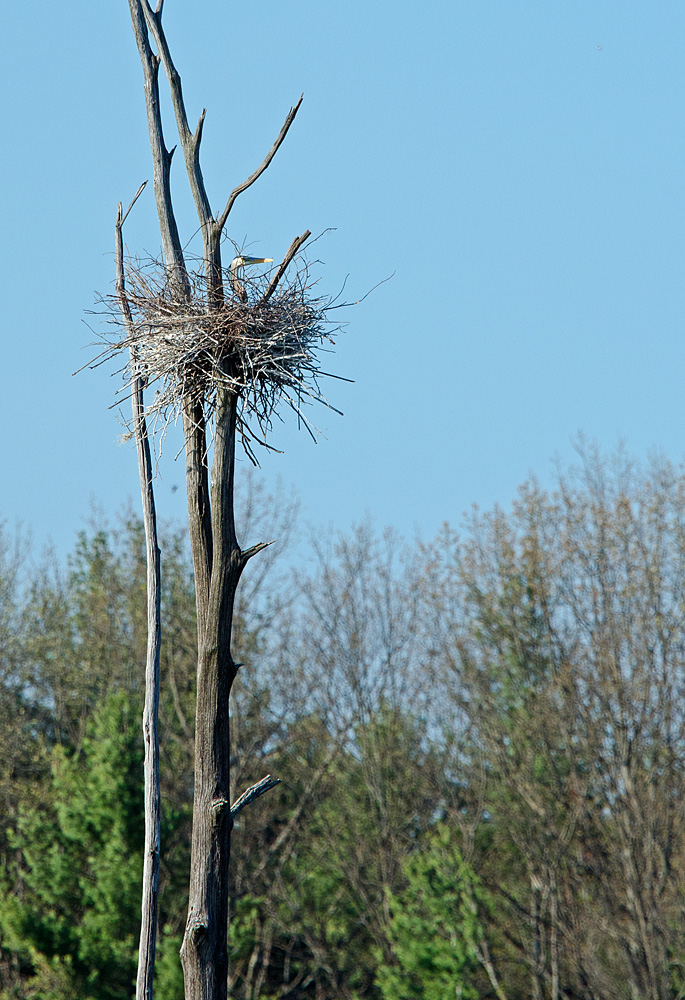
Heron nest

Great Bay National Wildlife Refuge, MA.